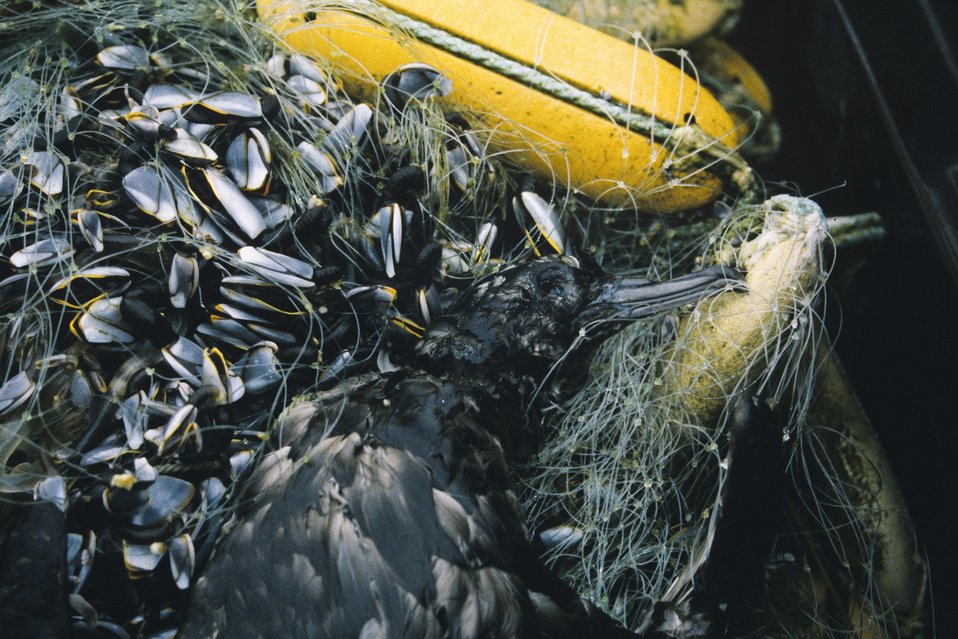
Drift net with bird

A sooty shearwater trapped by a drift net along the Oregon coast.